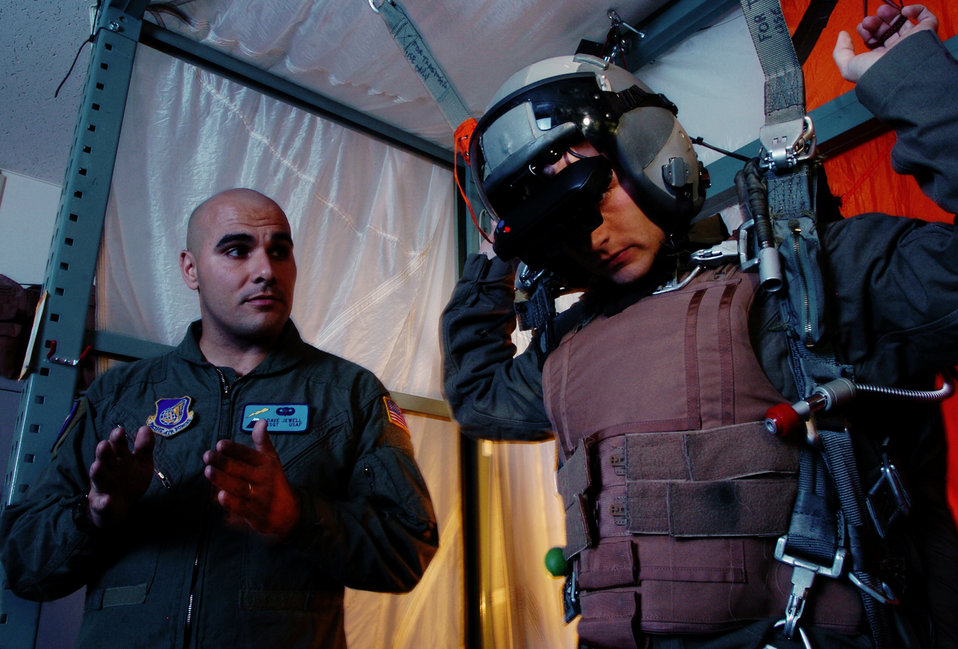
Sim-ply hang on

YOKOTA AIR BASE, Japan -- Staff Sgt. Dave Jewell (left) demonstrates the features of a virtual reality parachute simulator to Senior Airman Joshua Woods during training. Sergeant Jewell teaches high-threat combat survival, water survival and evasion techniques to hundreds of assigned and in-transit aircrew members and other Department of Defense people here. The Airmen are assigned to the 374th Operations Support Squadron.